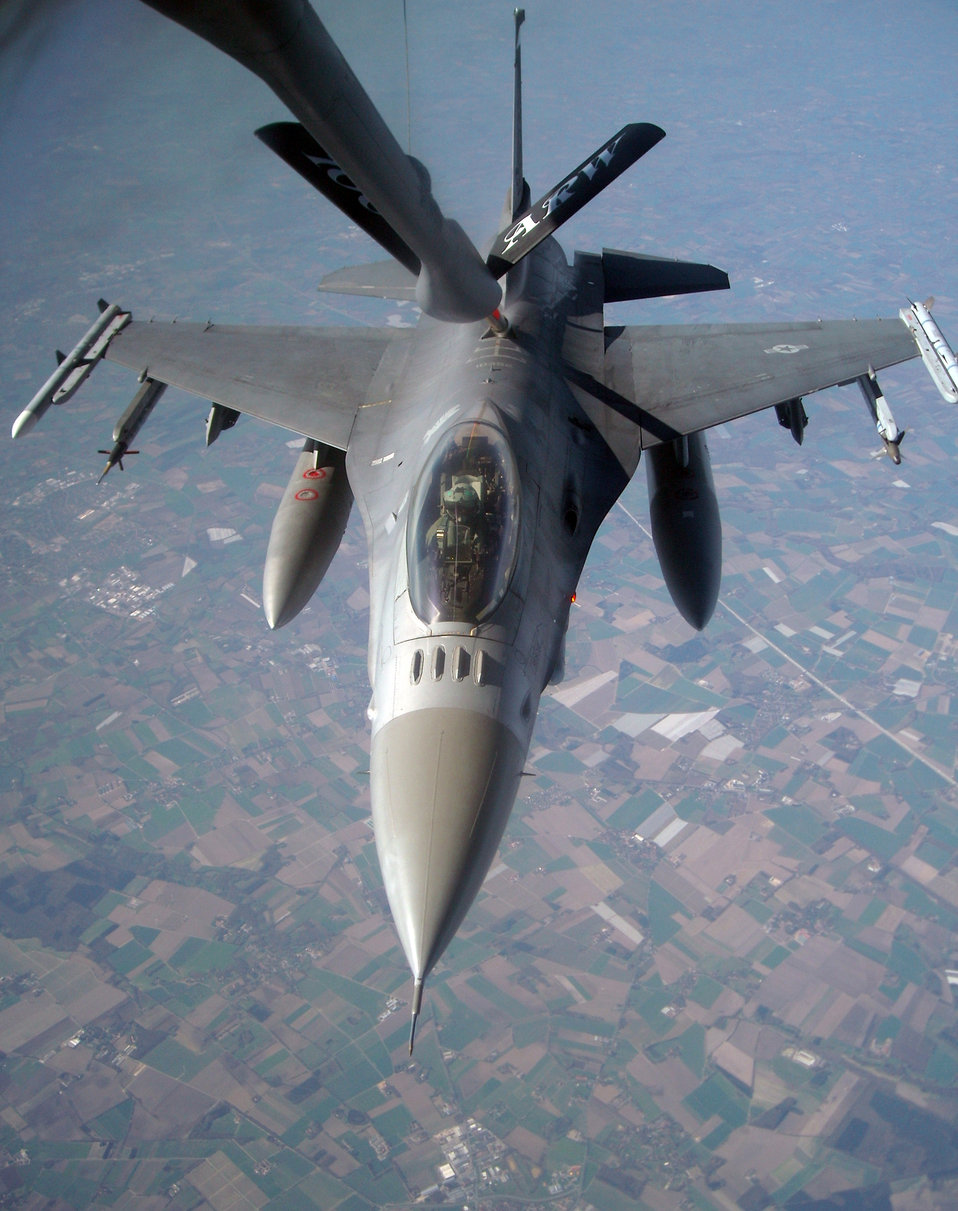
Iceland's volcanic ash affects Mildenhall exercise

Prior to flying operations being grounded, an F-16 Fighting Falcon from Spangdhalem Air Base, Germany, refuels off a 100th Air Refueling Wing KC-135 Stratotanker during exercise Brilliant Ardent April 15, 2010, at Royal Air Force Mildenhall, England.